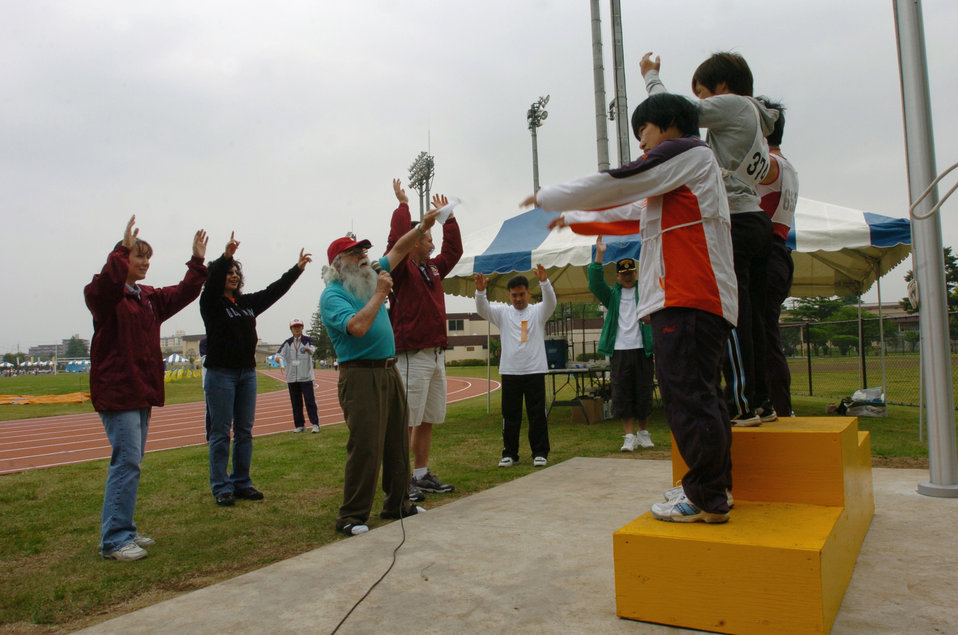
Special Olympics brings joy to Yokota volunteers

YOKOTA AIR BASE, Japan -- Volunteers cheer Japanese athletes during a medal presentation at the 26th Annual Kanto Plain Special Olympics here. More than 400 athletes from 20 Japanese schools competed in the two-day event May 7 and 8, which included basketball, softball throw, bowling, swimming, and track and field.